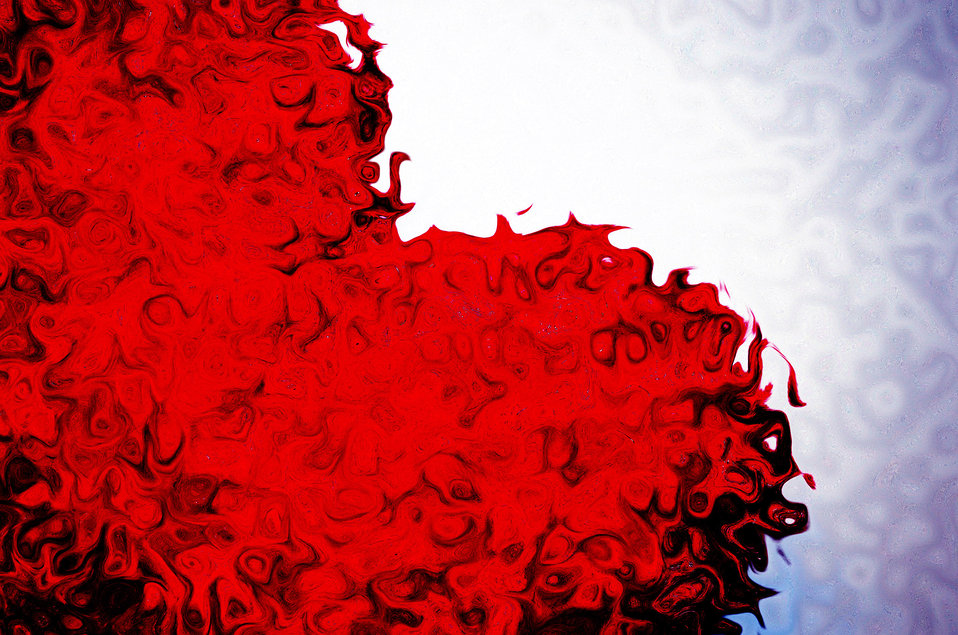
Heart of love.